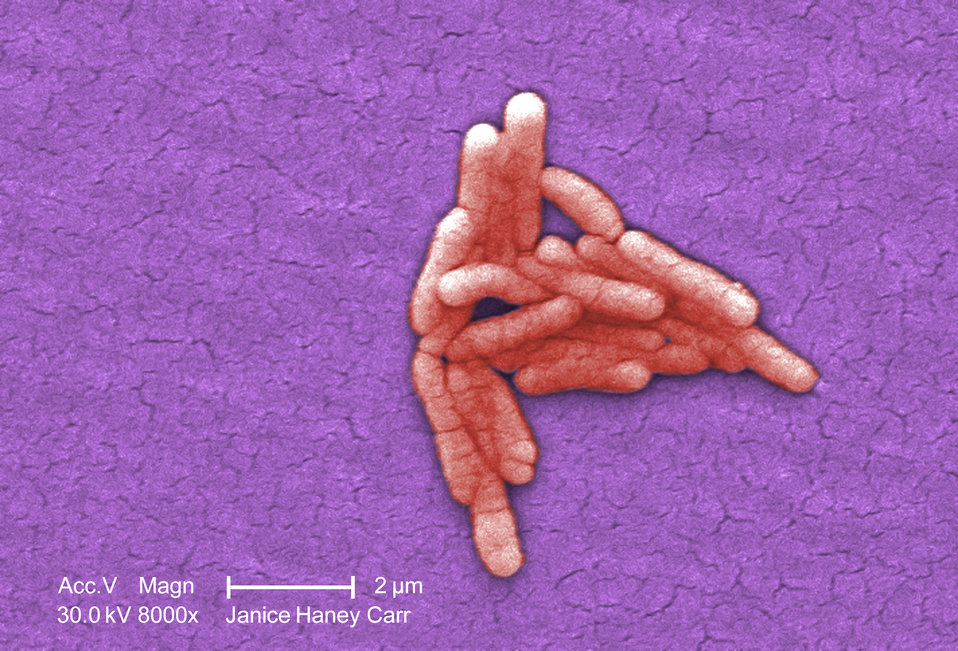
Under a moderately-high magnification of 8000X, this colorized scanning electron micrograph (SEM) revealed the presence of a small grouping of Gram-negative Salmonella typhimurium bacteria that had been isolated from a pure culture.